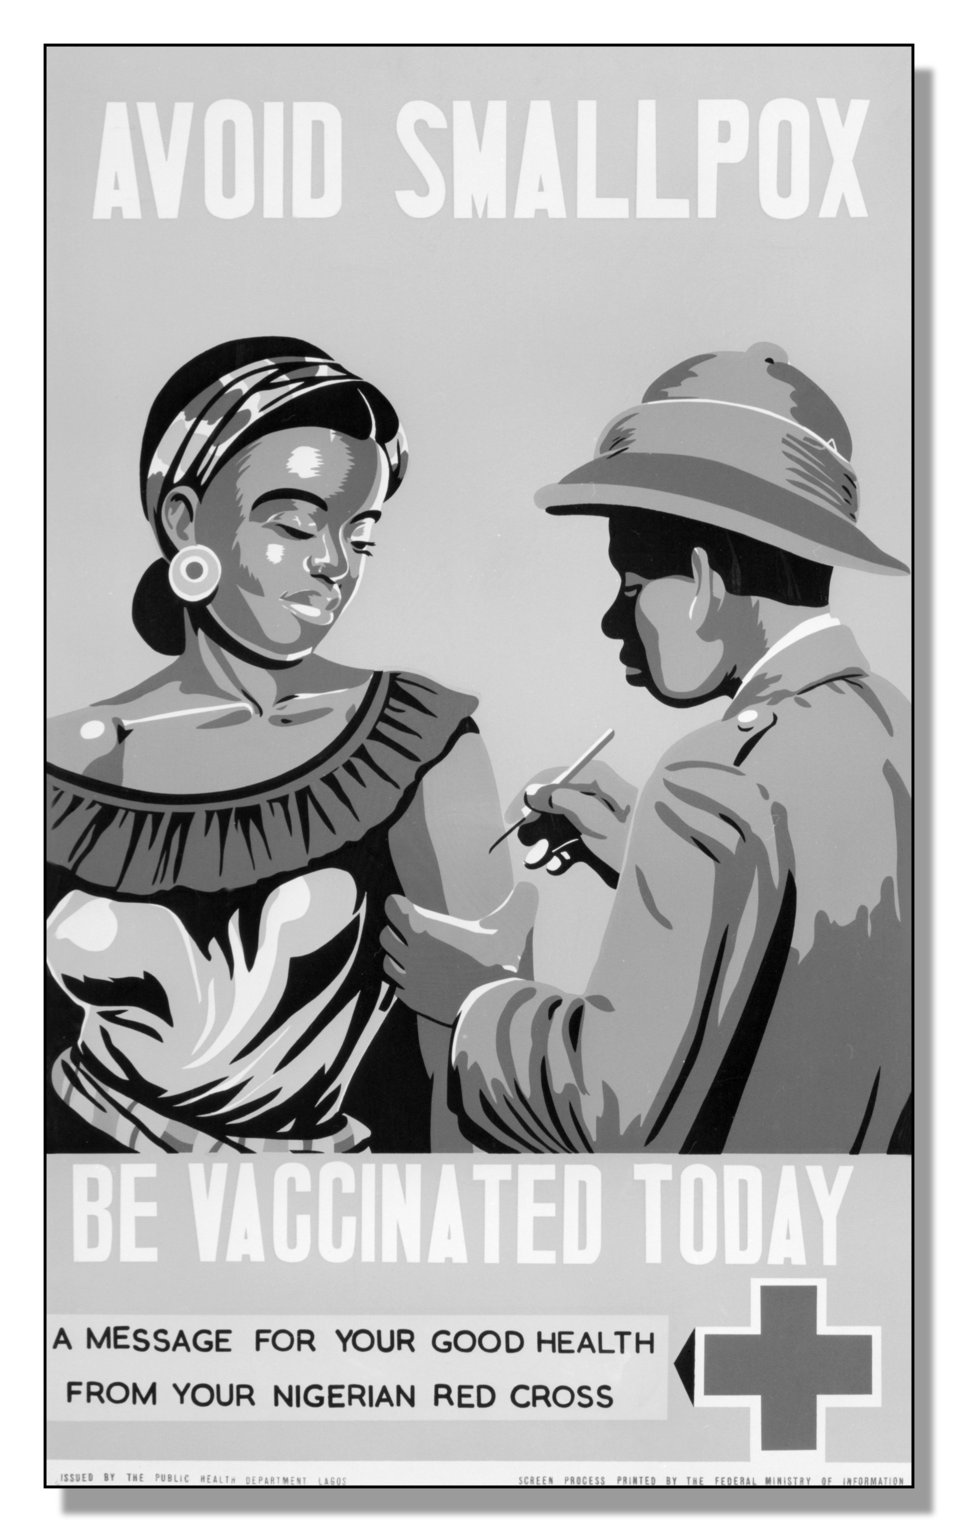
Early pre-1979 poster from Lagos, Nigeria promoting the importance of Smallpox and Measles vaccinations.